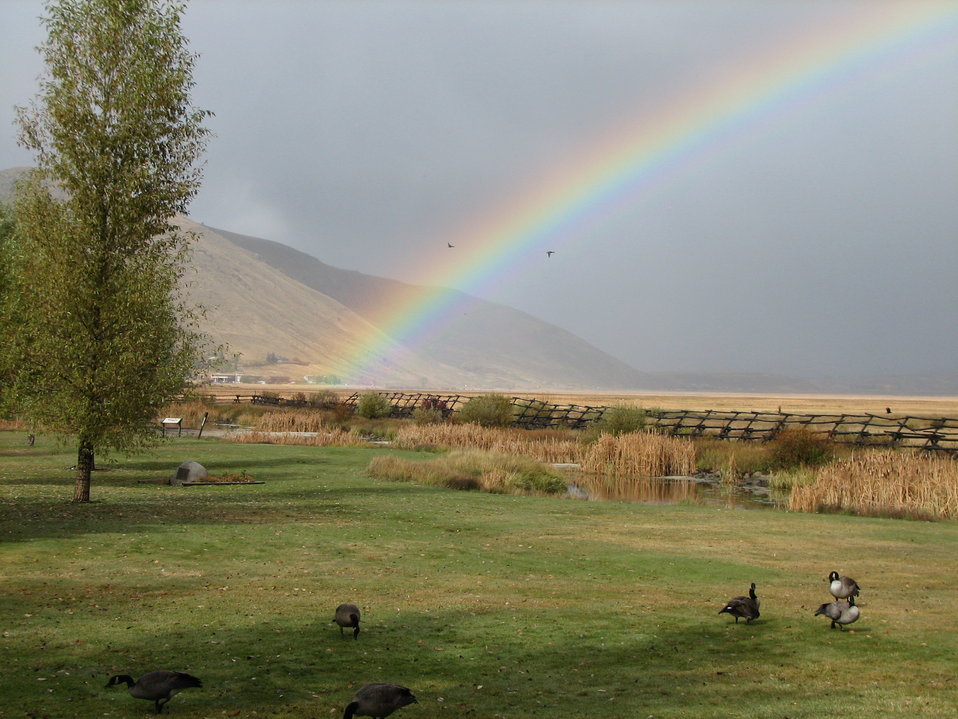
From the Visitor Center Lawn

The refuge staff is still looking for the pot of gold...